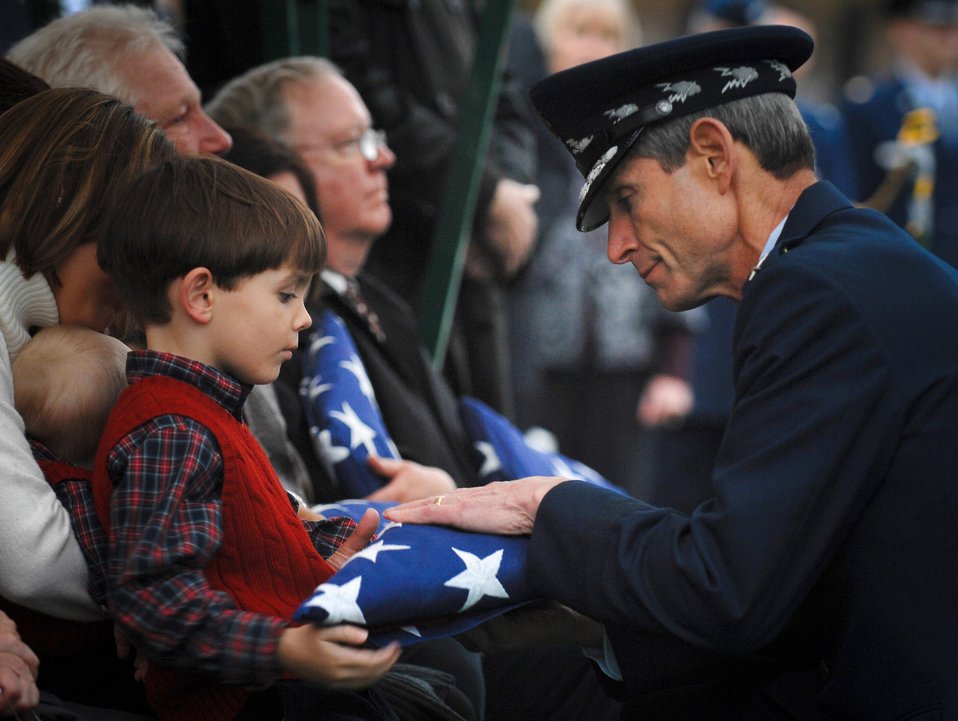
On behalf of a grateful nation

Air Force Chief of Staff Gen. Norton Schwartz hands a folded flag to one of the family members of the fallen B-52 Stratofortress crew Nov. 14 at Arlington National Cemetery in Virginia. A group burial took place for the crew that crashed July 21 off Guam's northwest coast.